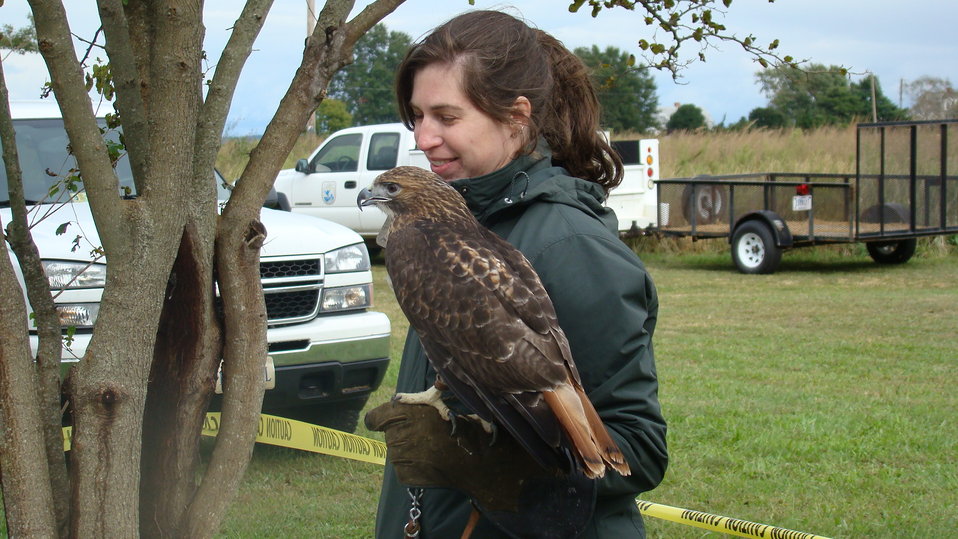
Rappahannock River Valley NWR 15th Anniversary

The Raptor Conservancy exhibit.